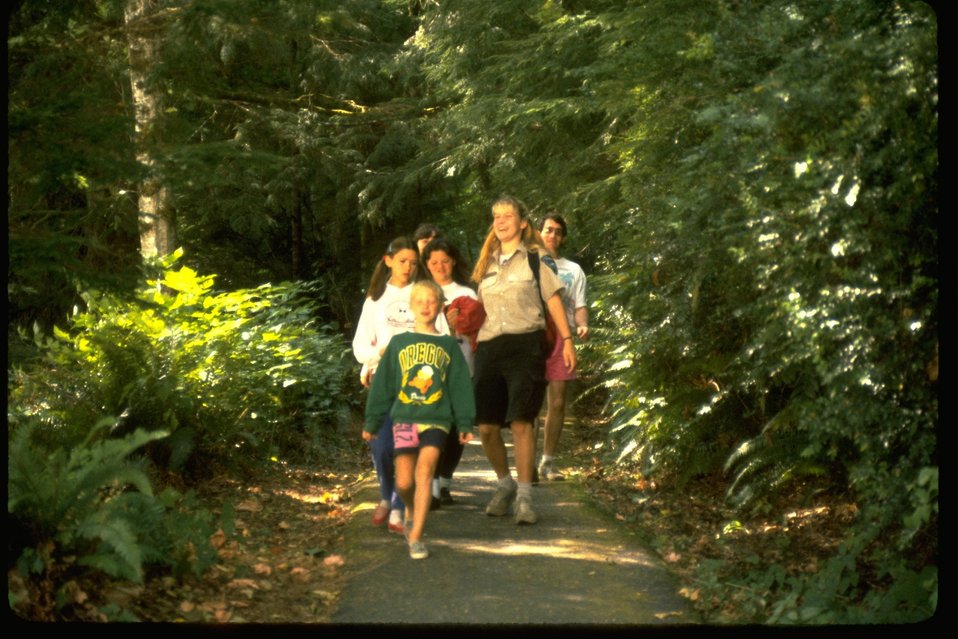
Loon Lake hiking trails.